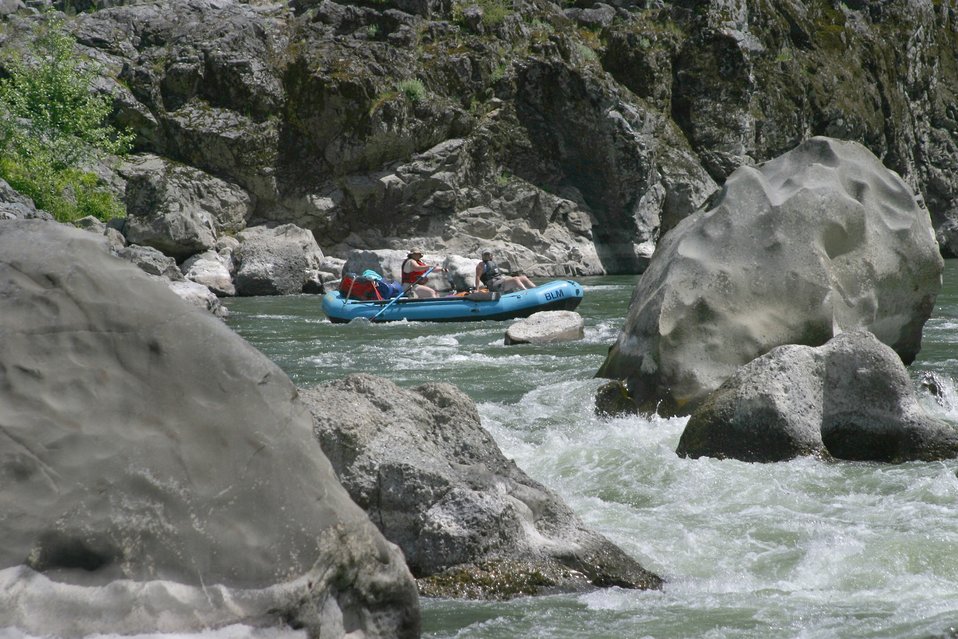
Wild section of the Rogue River from Grave Creek to Foster Bar May 19 to May 22.